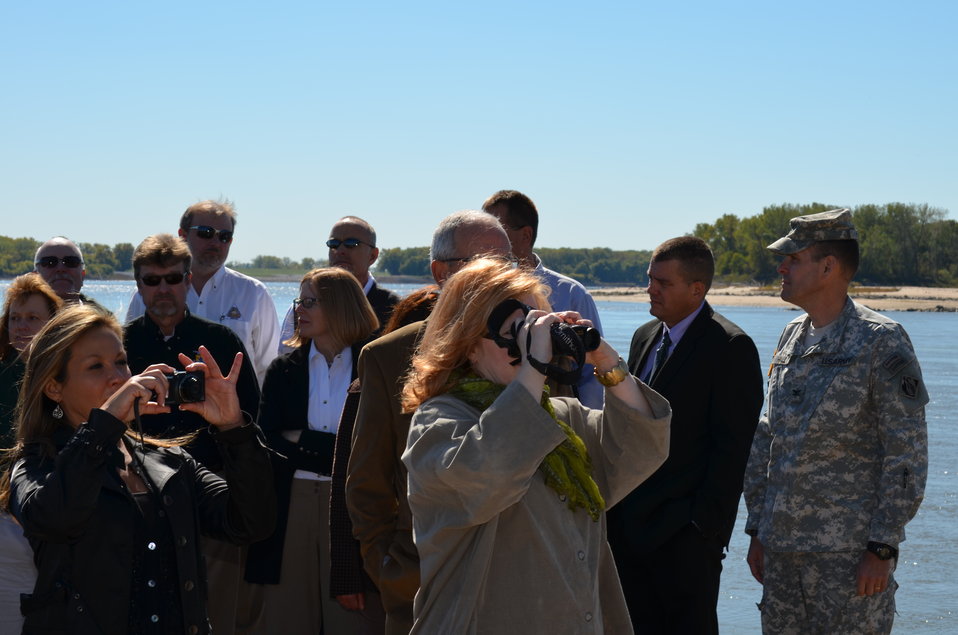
Taking in the view

Missouri/Mississippi Rivers Confluence Conservation Partnership members viewing the confluence. USFWS/Ashley Spratt